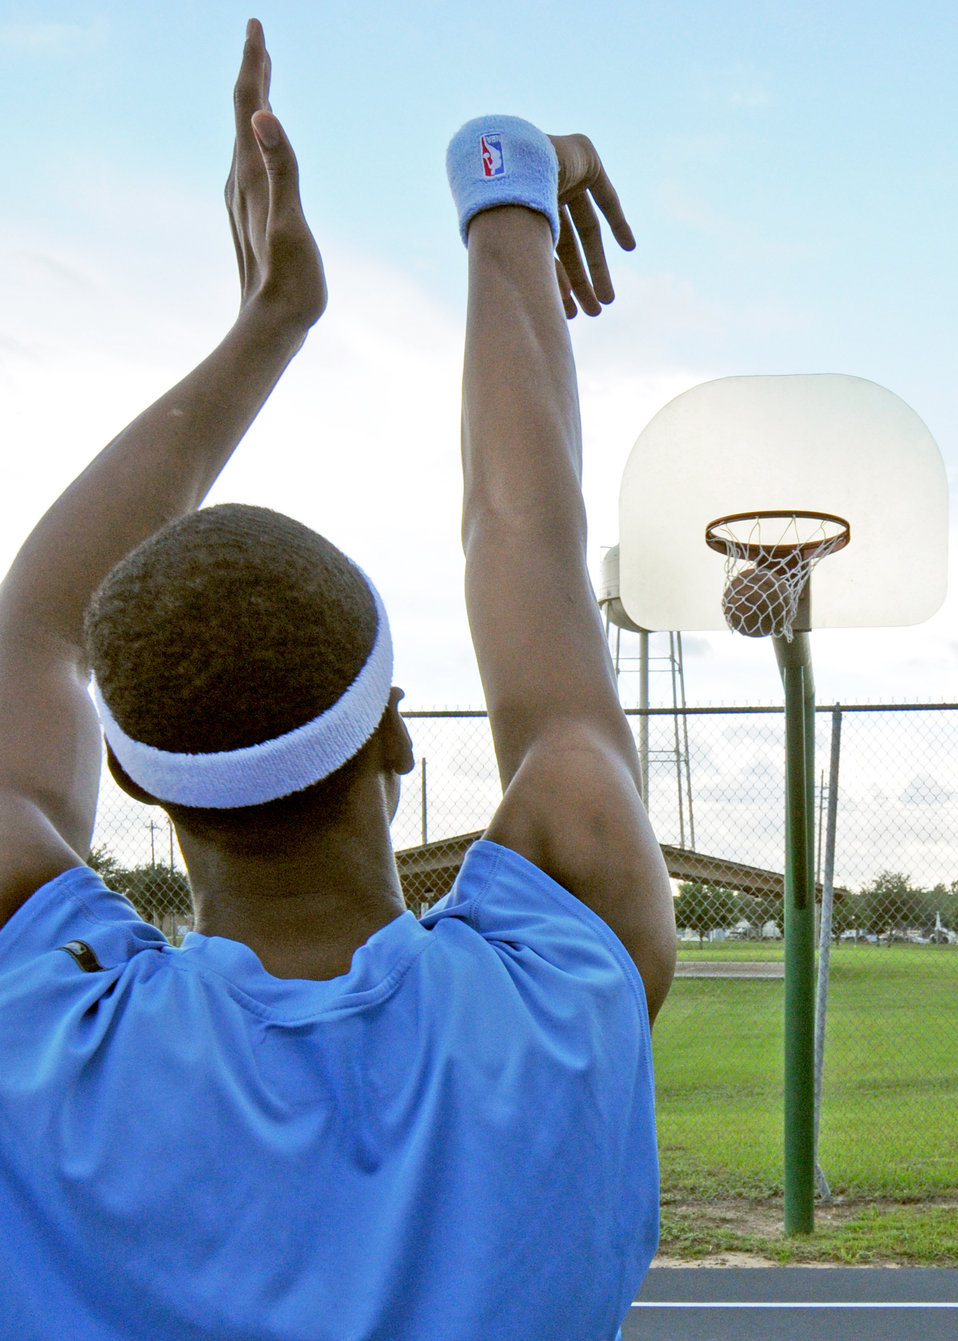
Antoine Hood

Capt. Antoine Hood sinks a free throw on the basketball court at the Duke Field. Captain Hood had a celebrated college basketball career at the Air Force Academy from 2002 through 2006, but has yet to realize his dream of playing in the NBA. With his active-duty commitment now complete, the reservist says he's ready to take the next step and make that dream a reality. Captain Hood is assigned 919th Special Operations Wing.